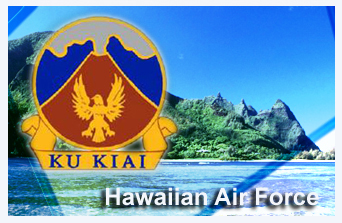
Hawaiian Air Force

On Oct. 19, 1940, the Hawaiian Air Force was established. It activated Nov. 1, 1940, at Fort Shafter, Territory of Hawaii, and assigned to the Hawaiian Department, U. S. Army. The motto was the Hawaiian phrase Ku Kiai . The Hawaiian AF was moved to Hickam Field in July 1941, and redesignated as 7th Air Force on Feb. 5, 1942.